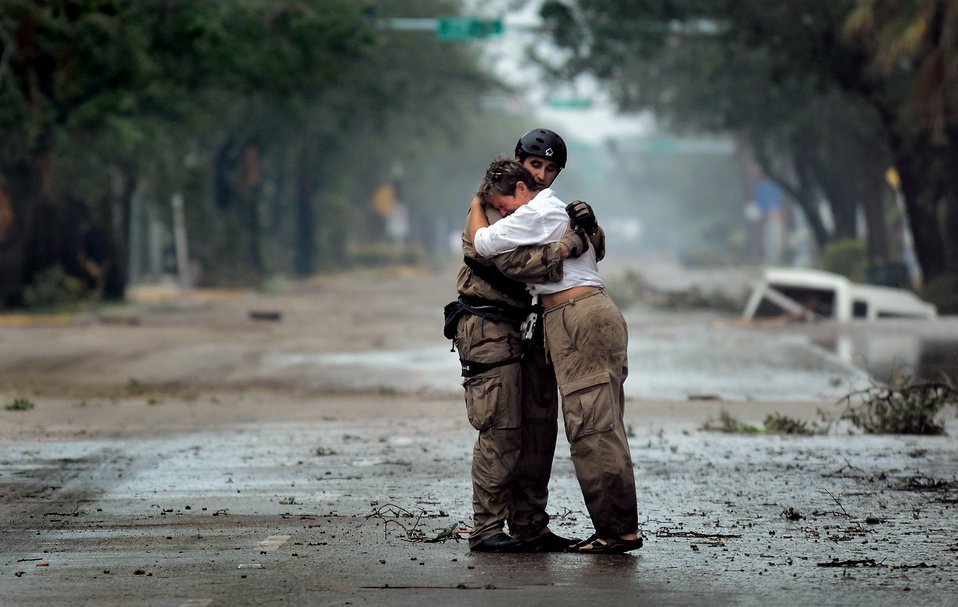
You're here!

Pararescueman Staff Sgt. Lopaka Mounts receives a hug from a Texas resident Sept. 13 during search and rescue operations after Hurricane Ike. Sergeant Mounts is assigned to the 331st Air Expeditionary Group at Randolph Air Force Base, Texas.